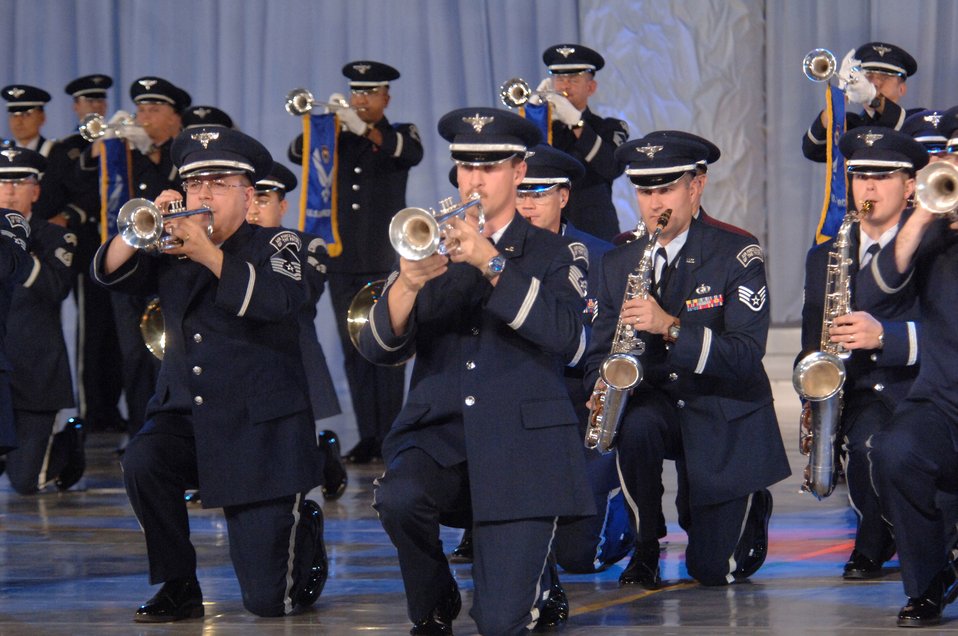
Airmen march to the beat in Tokyo

TOKYO (AFPN) -- Members of a combined U.S. Air Force Band play during the Marching Festival 2005 at Budokan Hall, Tokyo, Japan. The two-day festival, featuring over 1,000 performers, showcased U.S. and Japanese military bands, taiko drummers and a ceremonial drill team. Over 50,000 people attended the weekend shows. Air Force band members from around the world participated in the program.